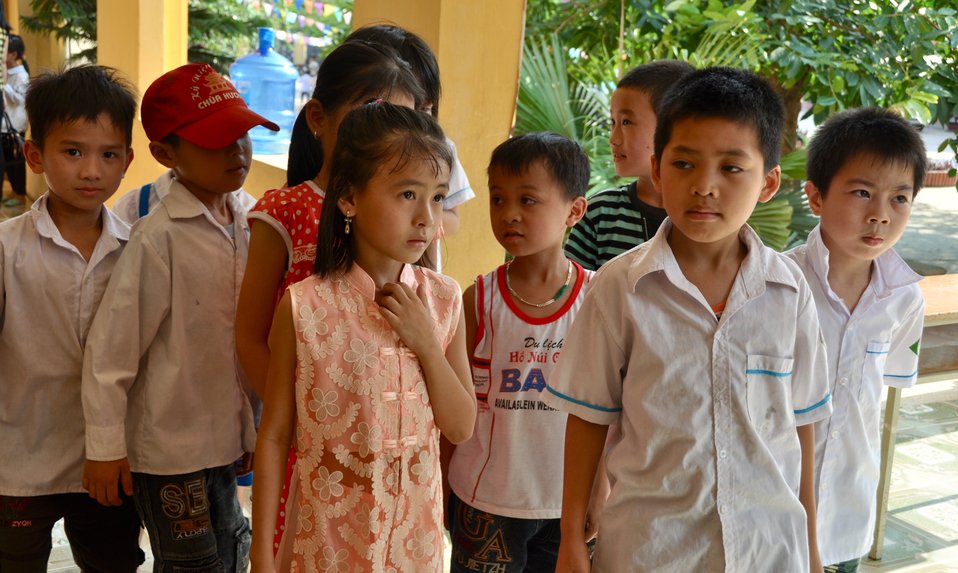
USAID supports deworming education and medication distribution in Bac Giang Province

May 20, 2013